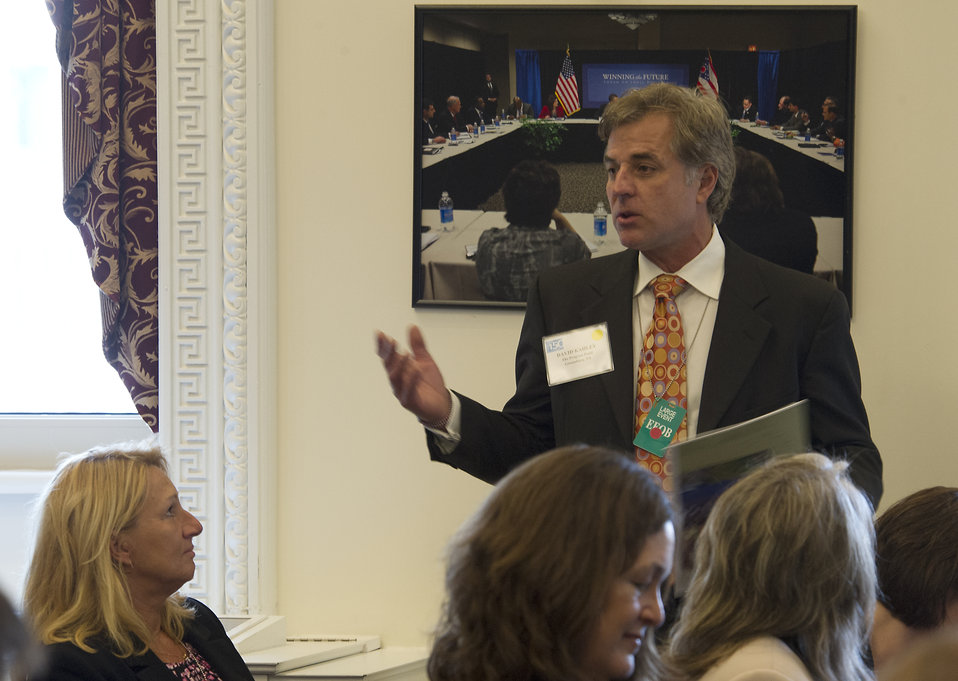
David Kahley, The Progress Fund, Greensburg, PA, speaking at the White House Forum on Regional Innovation in Rural America at the Eisenhower Executive Office Building, in Washington D.C., on Wednesday, June 13, 2012.